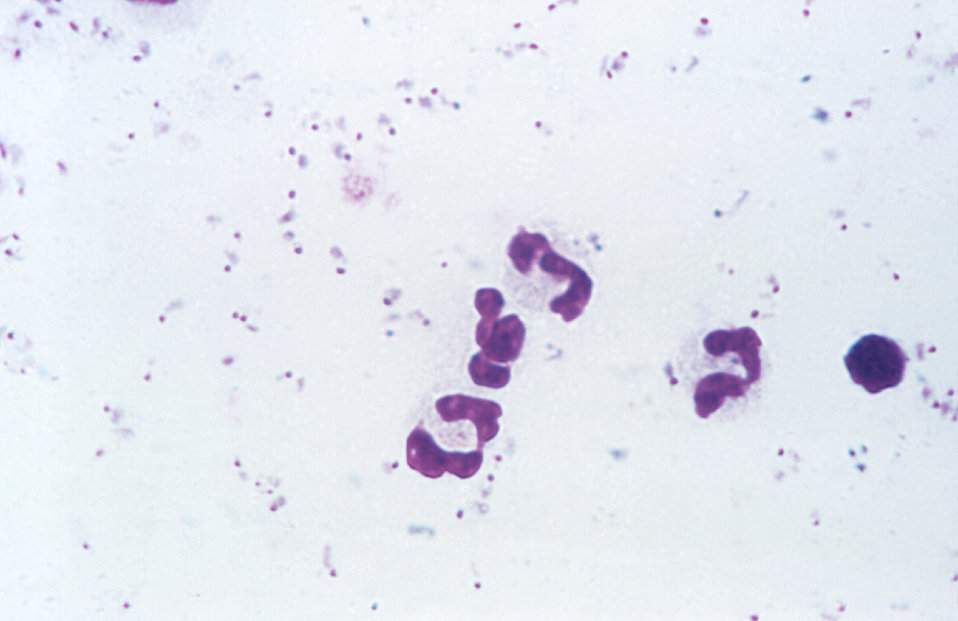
This thick film photomicrograph depicts P. falciparum parasites in the form of numerous rings; Giemsa stain; Mag. 1125X.